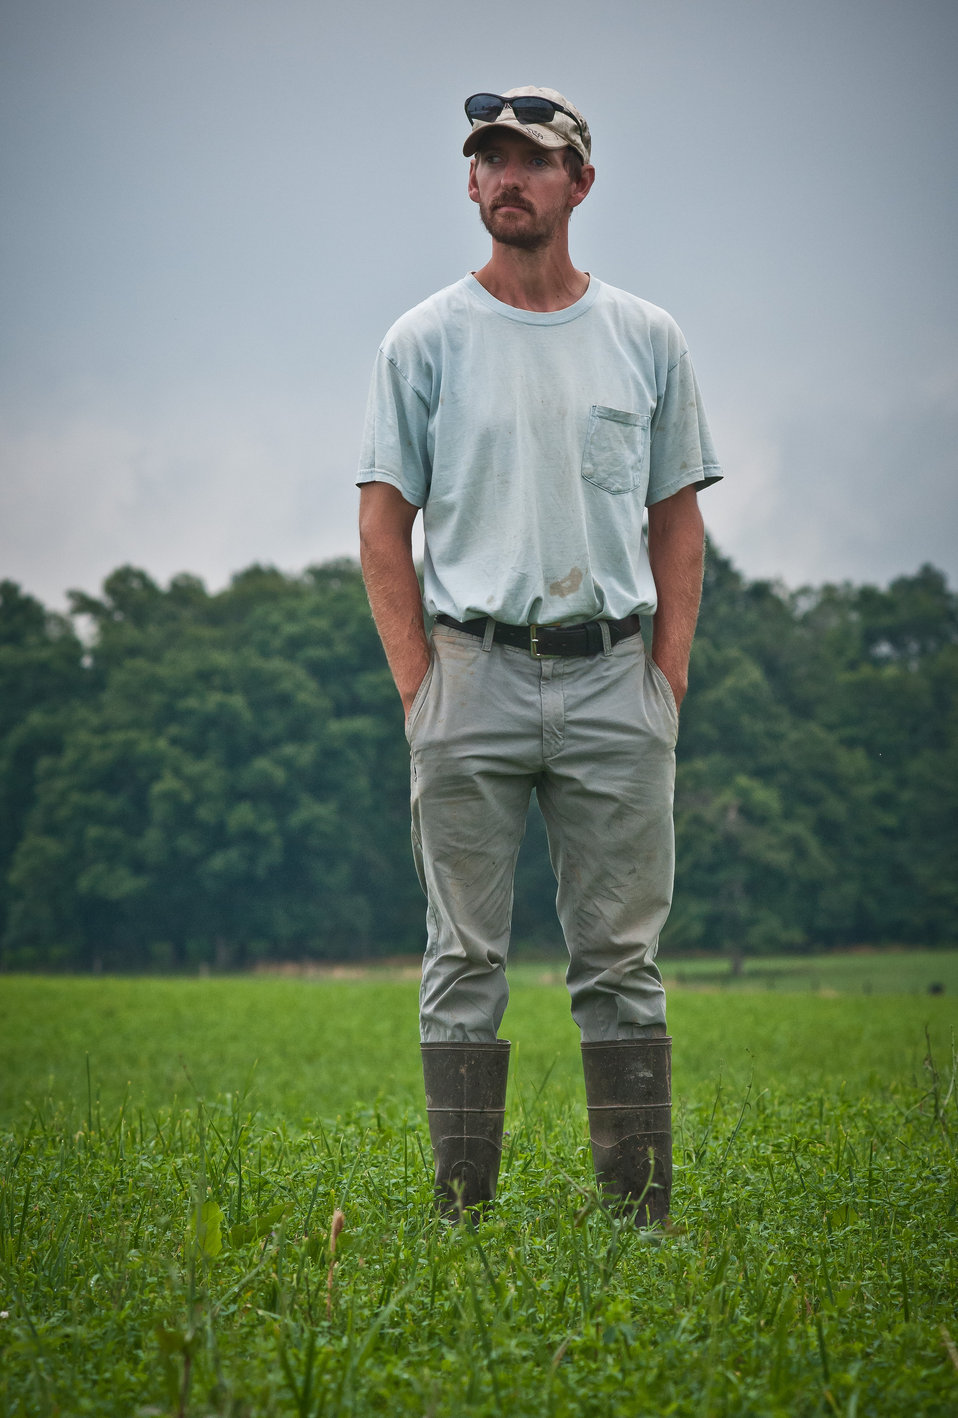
Farm assistant George Kloph at Nick’s Organic Farm, in Adamstown, MD, on Friday, July 12, 2013. The farm, owned by Nick Maravell, produces Black Angus beef, chicken, turkey, eggs, hay, soybeans, corn, alfalfa, orchard grass, rye; and other crops. The cattle are100% grass-fed receiving certified organic pasture, certified organic hay (in winter), water and mineral salts mixed with sea kelp. The cattle are not fed hormones, antibiotics or animal products. Poultry feed from grain is ground from organic grain. The poultry also graze on organic pastures. The farm has conducted on-farm research with federal, state and non-profit agencies to refine organic practices.